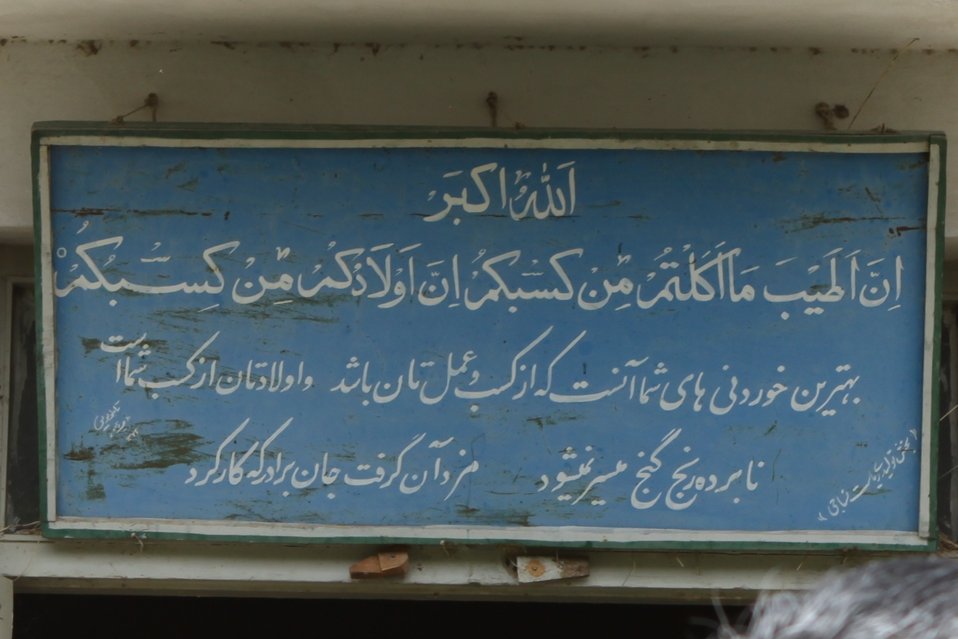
100525 Hirat Textile Company 779